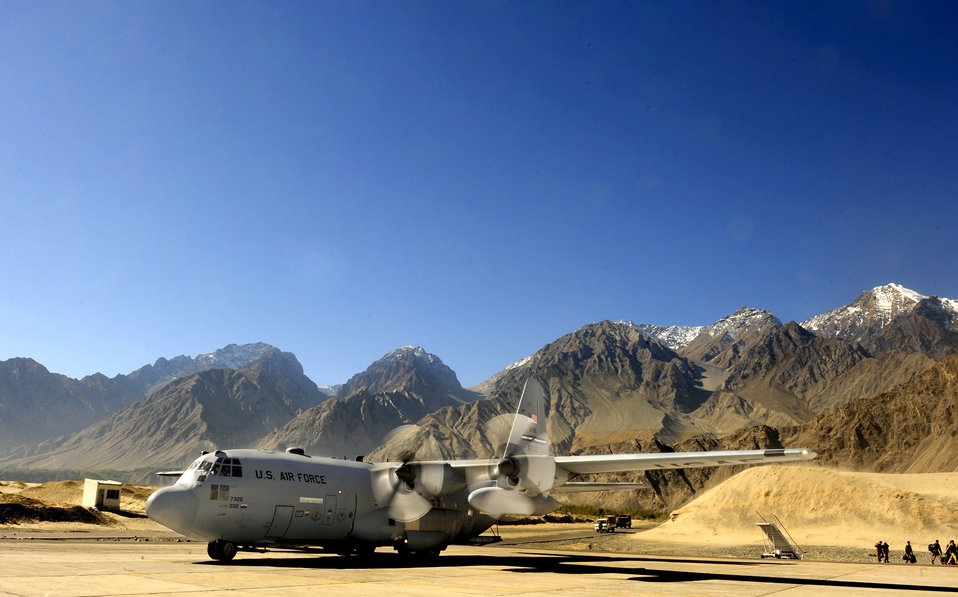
Relief is here

A C-130 Hercules is positioned to unload humanitarian aid supplies Oct. 3, 2010, at Skardu Airfield, Pakistan. The U.S. military, working in close coordination with the Pakistan military, have transported more than 6.6 million kilos of relief supplies and evacuated 21,000 people in the flood-affected regions of Pakistan in the past two months.